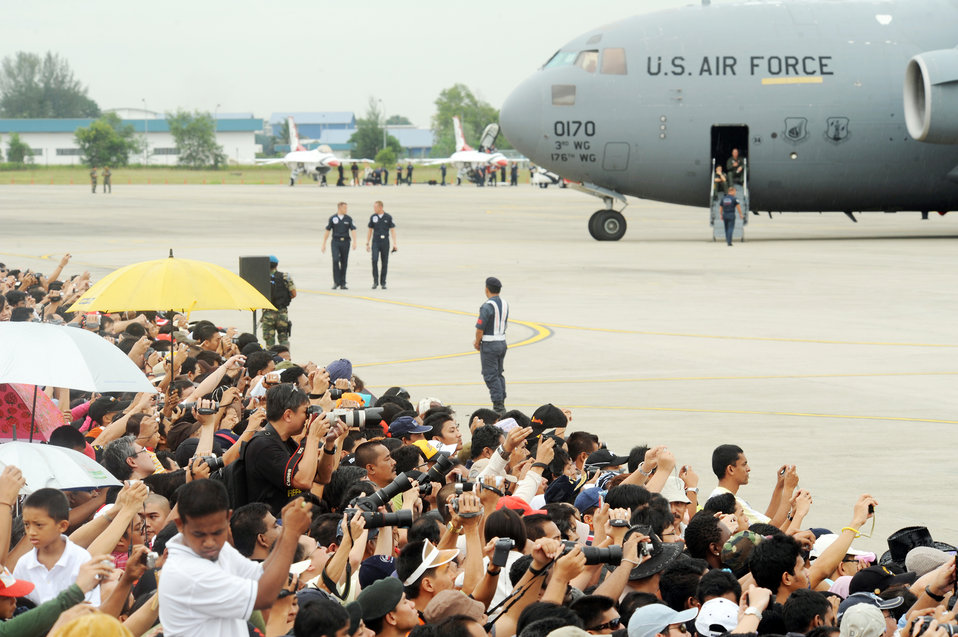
Thunderbirds perform for Malaysian audience

The crowd cheers as U.S. Air Force Air Demonstration Squadron, the Thunderbirds, get ready to take off Oct. 2, 2009, in Kuala Lumpur, Malaysia. The Thunderbirds' tour of the Pacific aids in fostering friendships with U.S. allies, which helps to promote security and stability throughout the region.